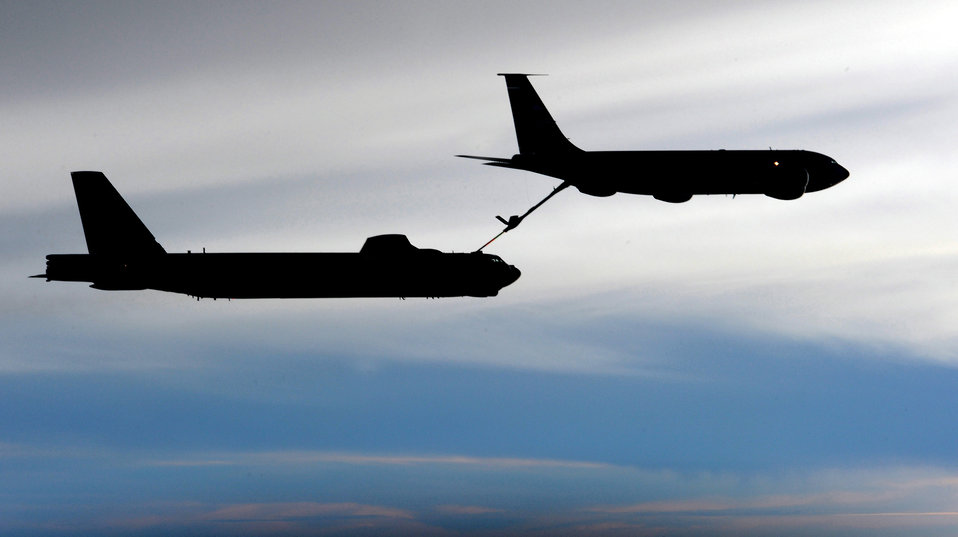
Reserve Airmen complete deployment to Guam

A B-52 Stratofortress from Minot Air Force Base, N.D., receives fuel from a KC-135 Stratotanker over the Pacific Ocean during exercise Tropic Fury. Airmen of the 434th Air Refueling Wing from Grissom Air Reserve Base, Ind., recently completed a deployment in support of Pacific refueling operations.